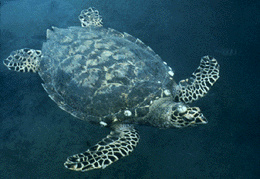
Hawks Bill Turtle - Kealia Pond NWR

The hawksbill's narrow head and jaws are shaped like a beak to allow it to get food from crevices in coral reefs. They eat sponges, anemones, squid and shrimp.